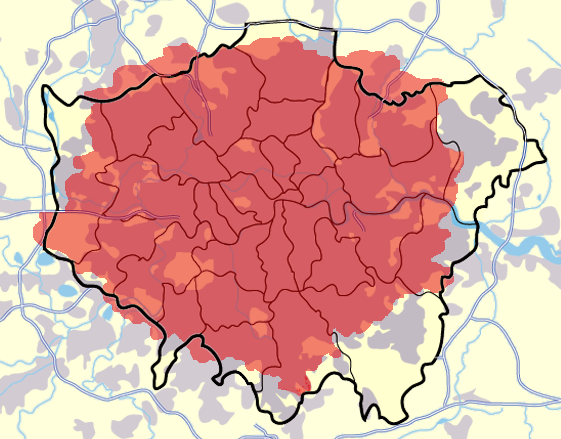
A modified map of en:Greater London, highlighting the en:020 (UK dial code) in red.